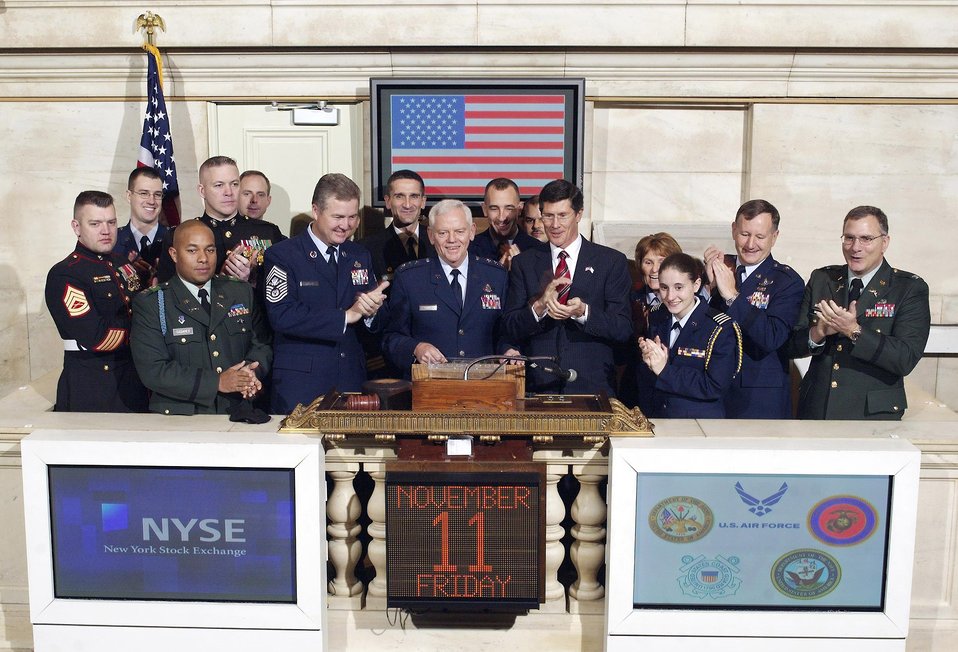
Ringing the bell

NEW YORK (AFPN) -- Lt. Gen. Arthur J. Lichte, Air Force assistant vice chief of staff (center), Chief Master Sergeant of the Air Force Gerald R. Murray (center left), and members of the armed forces ring the opening bell at the New York Stock Exchange. The group rang the bell Nov. 11 to commemorate the 87th anniversary of Veterans Day.